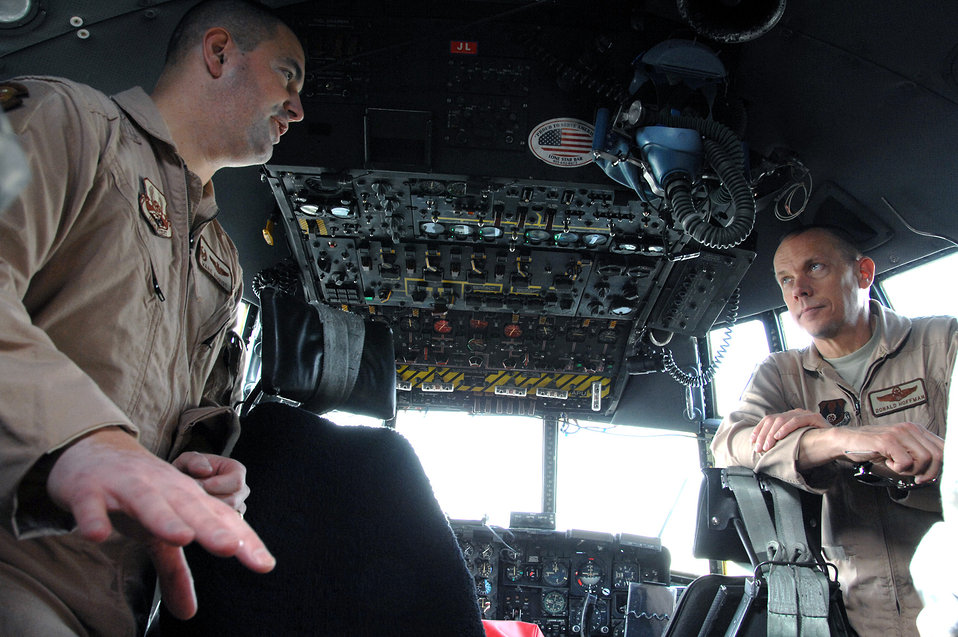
AFMC commander visits Southwest Asia

Lt. Col. Mark August (left) briefs Gen. Donald Hoffman, commander of Air Force Materiel Command, in the cockpit of a C-130 Hercules during a flightline tour Feb. 9 at an air base in Southwest Asia. General Hoffman visited the 386th Air Expeditionary Wing as part of a multi-base visit to the area of operations. Colonel August is the 737th Expeditionary Airlift Squadron commander.